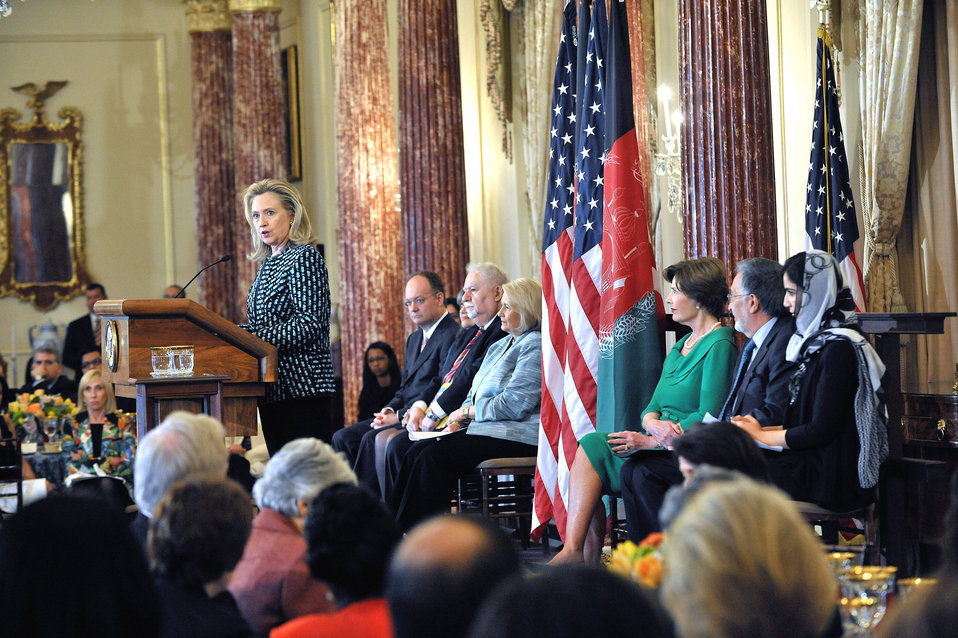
Secretary Clinton Delivers Remarks at the U.S.-Afghan Women's Council 10th Anniversary Celebration

U.S. Secretary of State Hillary Rodham Clinton delivers remarks at the U.S.-Afghan Women's Council 10th Anniversary Celebration Luncheon at the Department of State in Washington, D.C. on March 21, 2012.